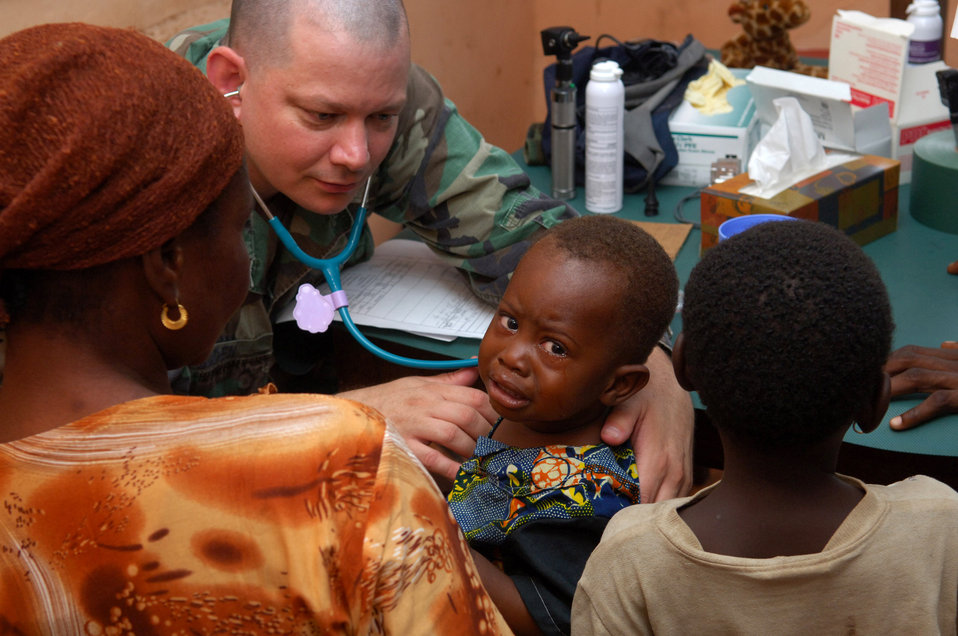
Med Flag 2006

Maj. (Dr.) Steven Boden examines a young Ghanaian boy during Med Flag 2006 in Tamale, Ghana, Sept. 12. More than 50 U.S. Air Forces in Europe Airmen participated in the medical humanitarian mission. Major Boden is with the 52nd Medical Group at Spangdahlem Air Base, Germany.